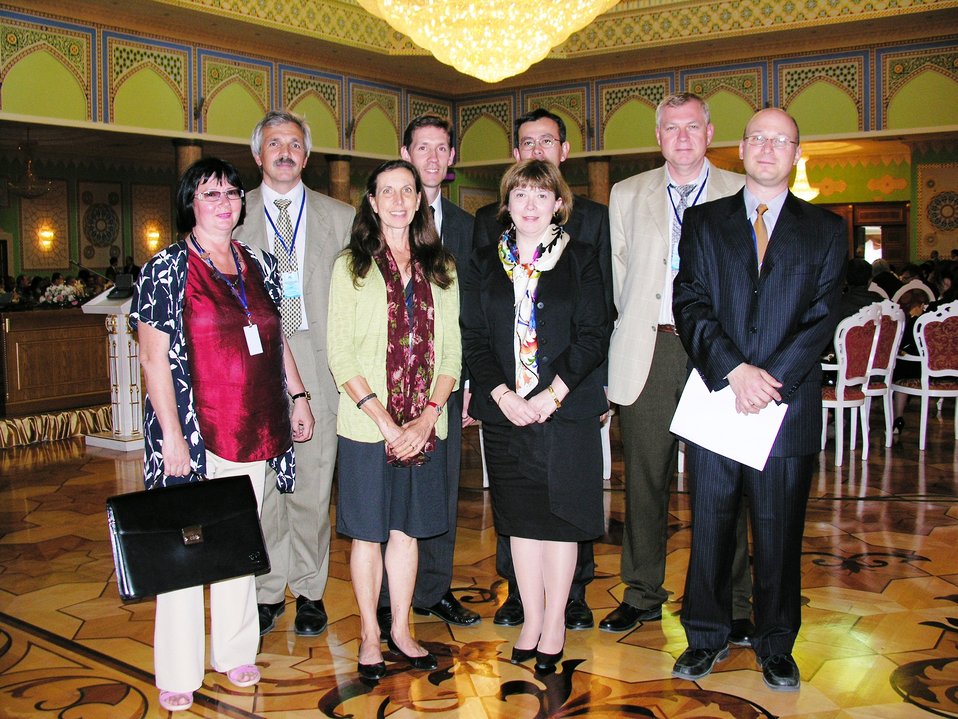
U.S. Delegation to Dushanbe Water for Life Conference Poses for a Photo

The U.S. delegation to the Dushanbe Water for Life Conference in Dushanbe, Tajikistan, on June 9, 2010.